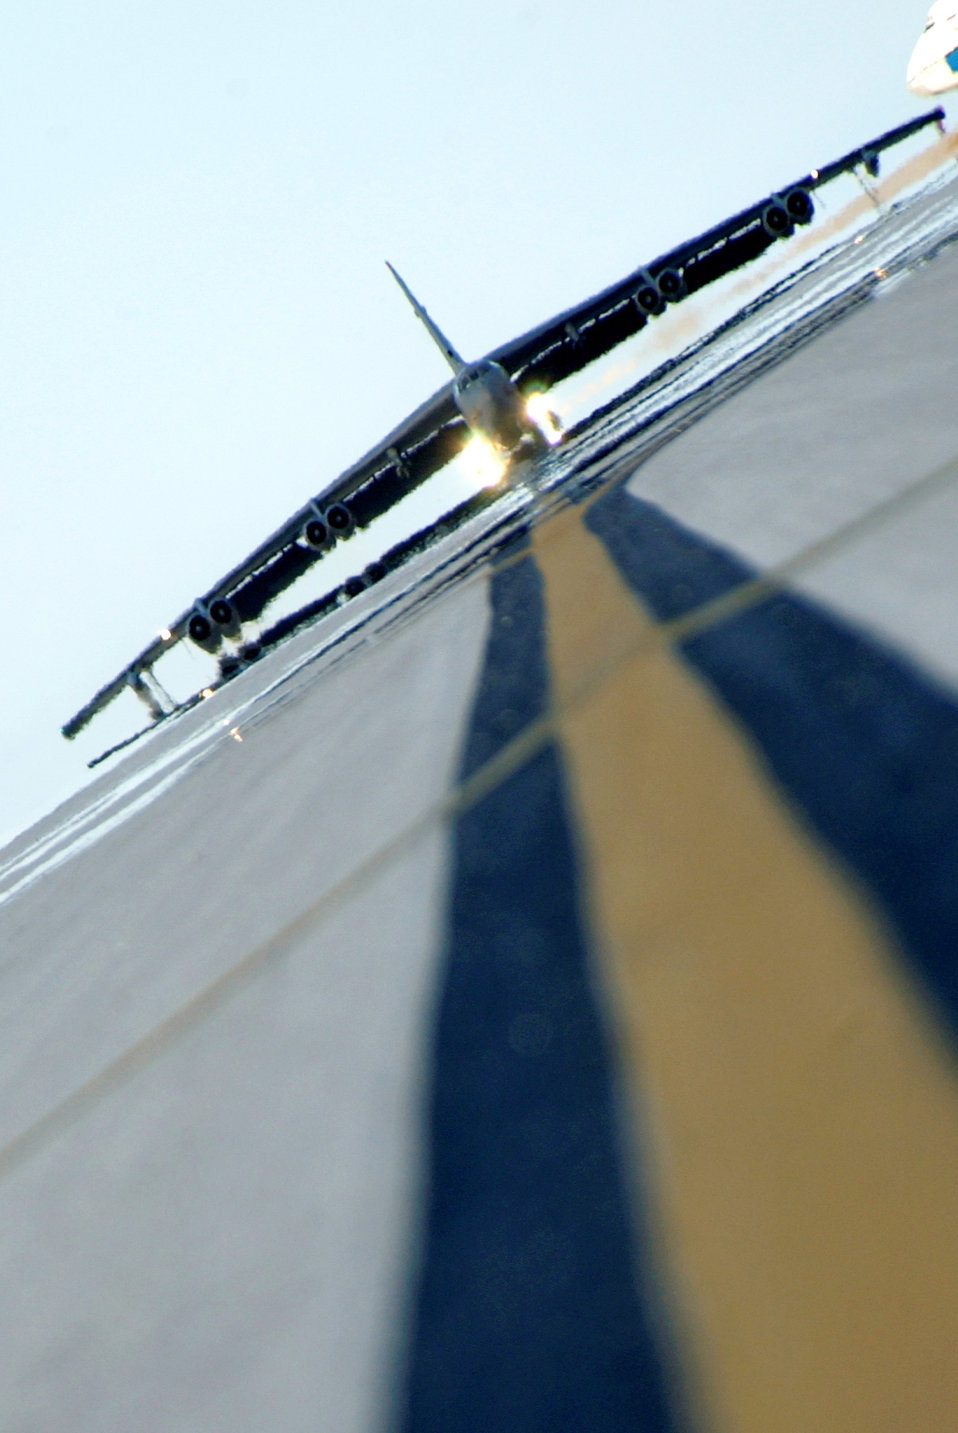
B-52s arrive at Andersen

A 23rd Expeditionary Bomb Squadron B-52 Stratofortress taxis on the airfield after landing at Andersen Air Force Base, Guam, Aug. 30. The aircraft, from the 5th Bomb Wing at Minot AFB, N.D., is one of six scheduled to deploy to Andersen for four months. Six aircraft and approximately 300 Airmen will be deployed here through January. In addition to enhancing regional security and demonstrating the U.S. commitment to the western Pacific, Airmen will take part in several integrated training opportunities.